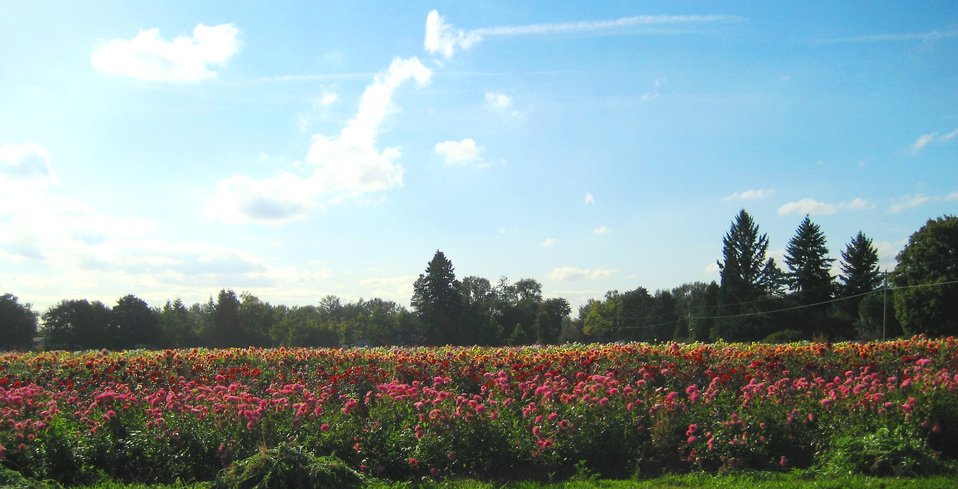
A field of en:Dahlias near en:Canby, Oregon.